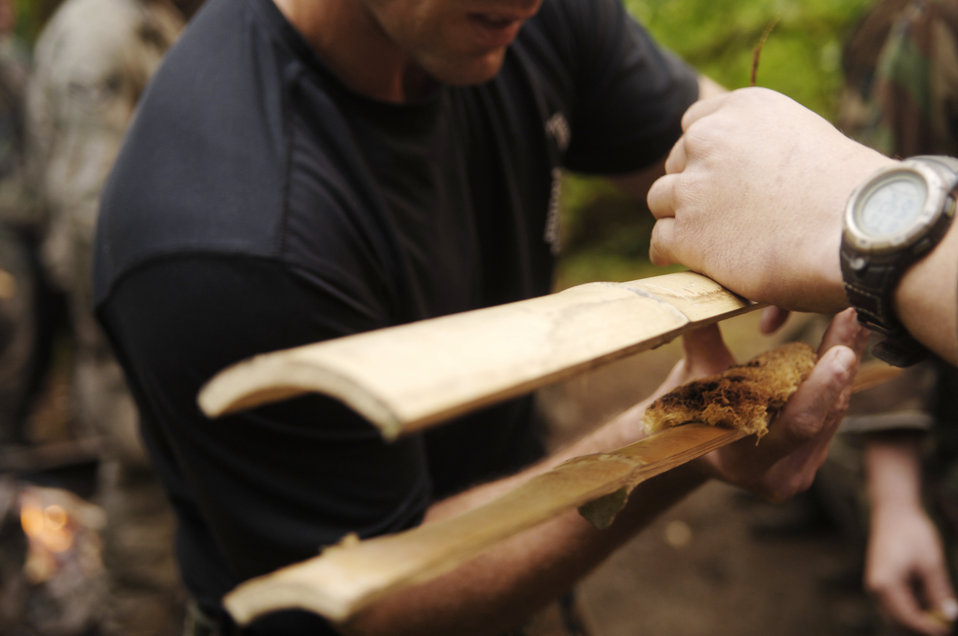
Students learn to survive in 'Tropics'

A student in the Survival, Evasion, Resistance and Escape Course at Fairchild Air Force Base, Wash., places an ember on tinder Sept. 16, 2009, in the Olympic National Forest's rainforest in Washington. Students learned various fire starting techniques, including using bamboo, as making fire in such wet conditions proved challenging for many students over this phase of training.